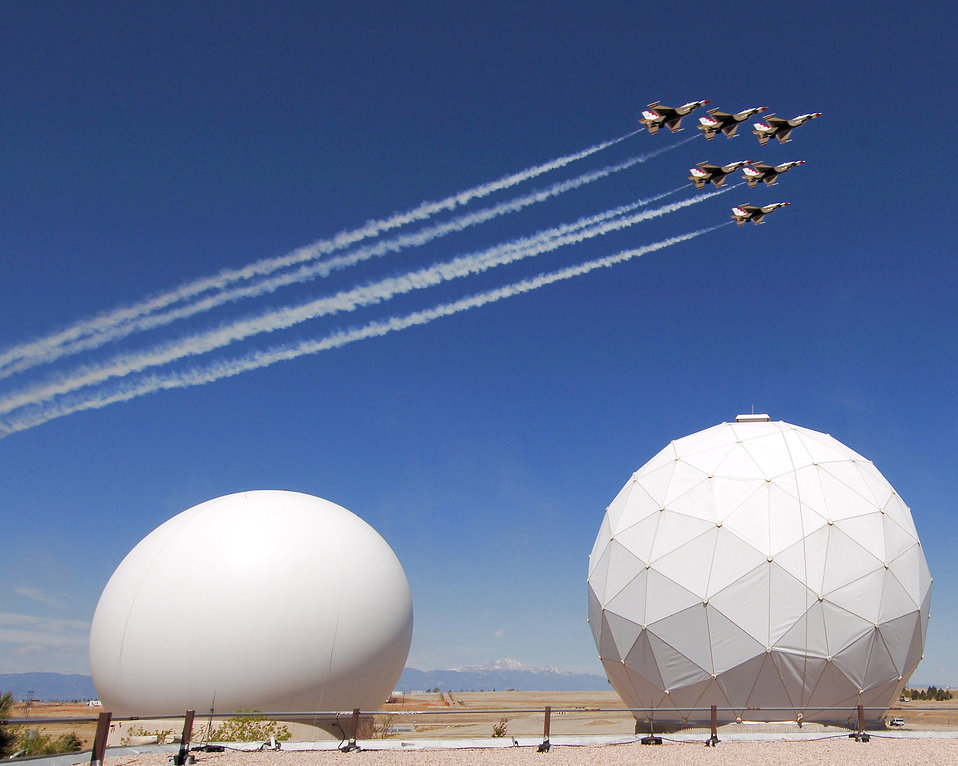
Airpower meets space power

The Air Force Thunderbirds fly over Schriever Air Force Base, Colo., May 25. In the foreground are twin radomes of the Colorado Tracking Station, part of the Air Force Satellite Control Network.